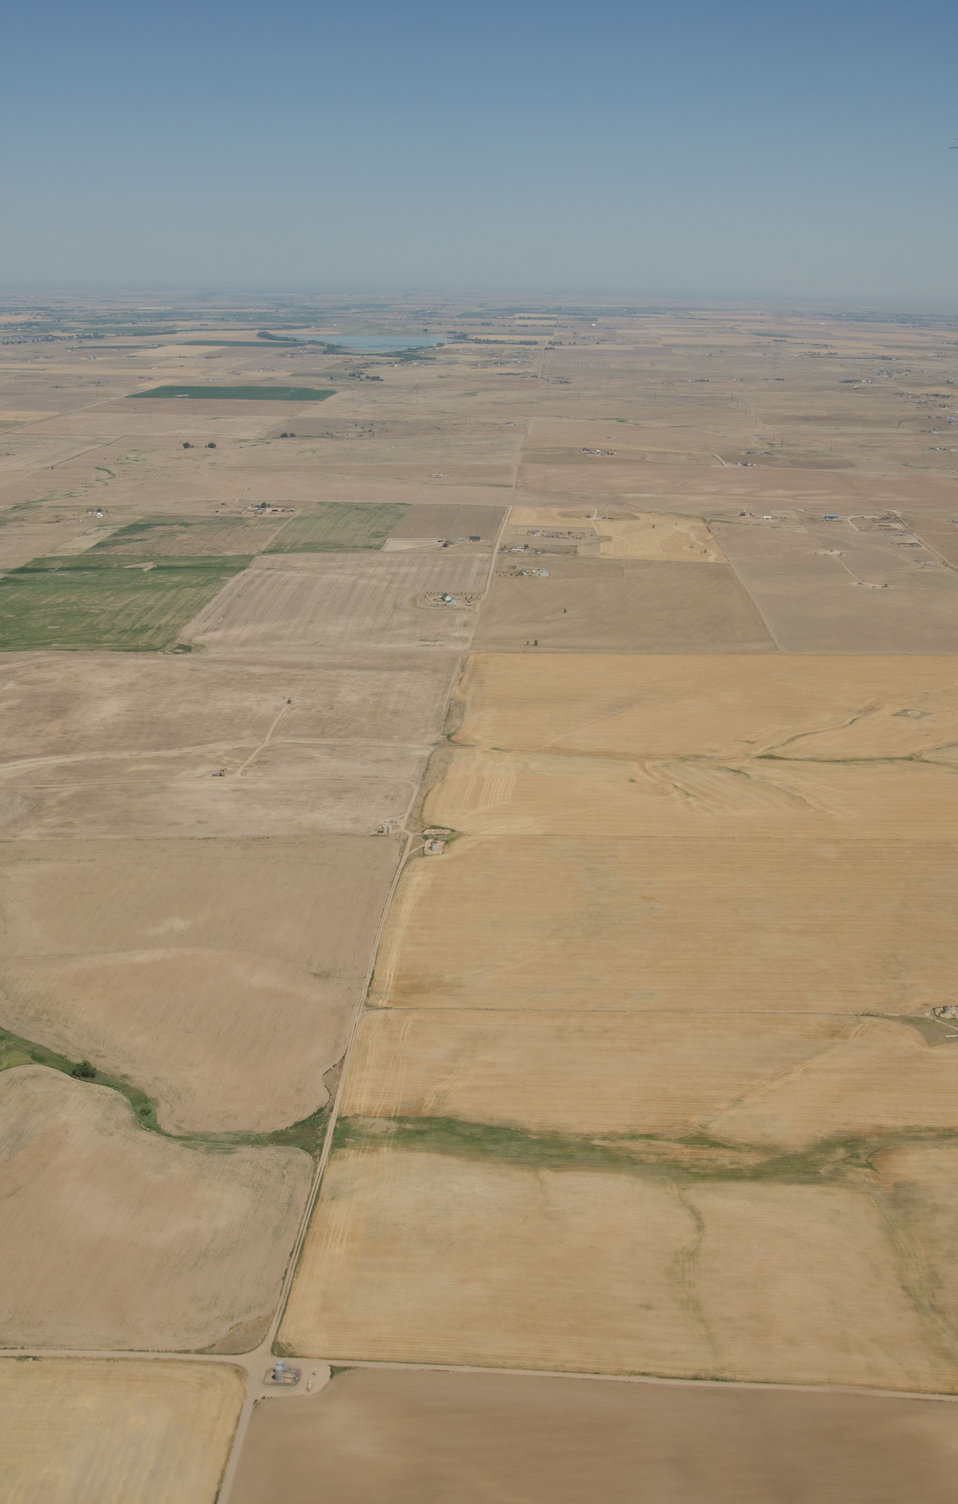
Aerial views of drought affected Colorado farm lands, 69 miles east of Denver, Colorado on Saturday, July 21, 2012. Green areas are irrigated, the yellow areas are dryland wheat crops.